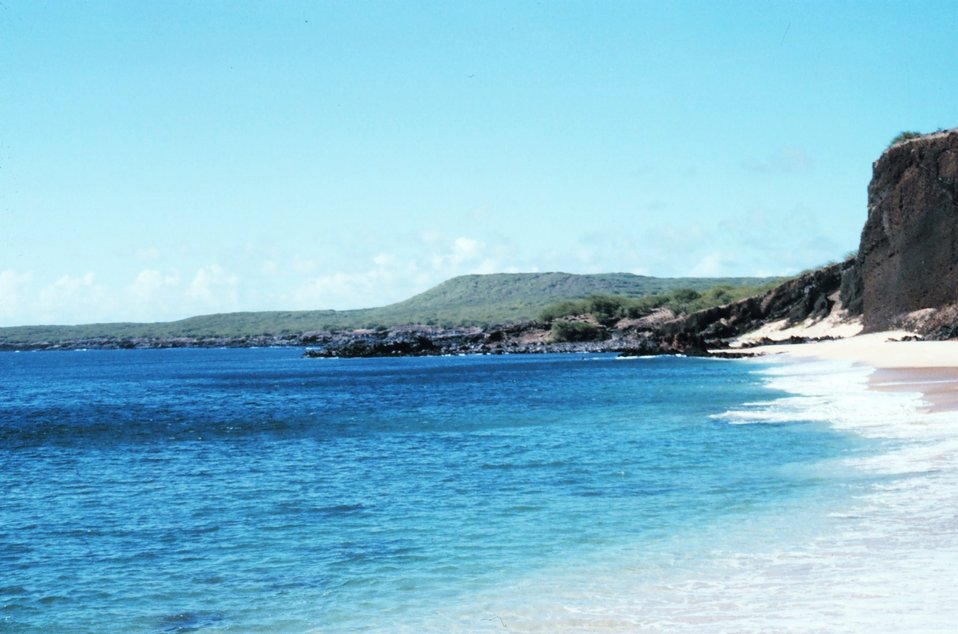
Western Molokai